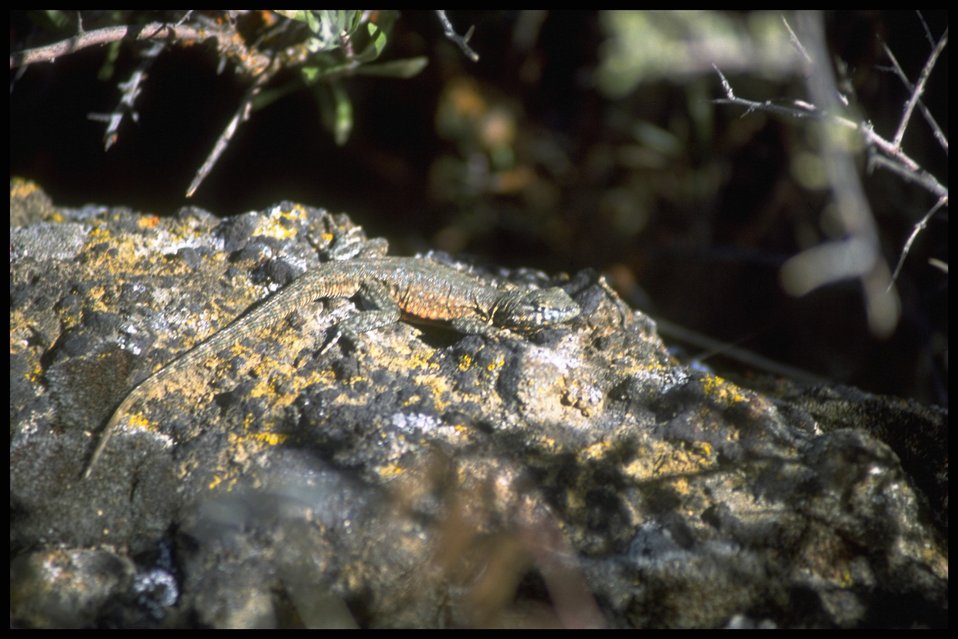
Lizard, Lakeview District.